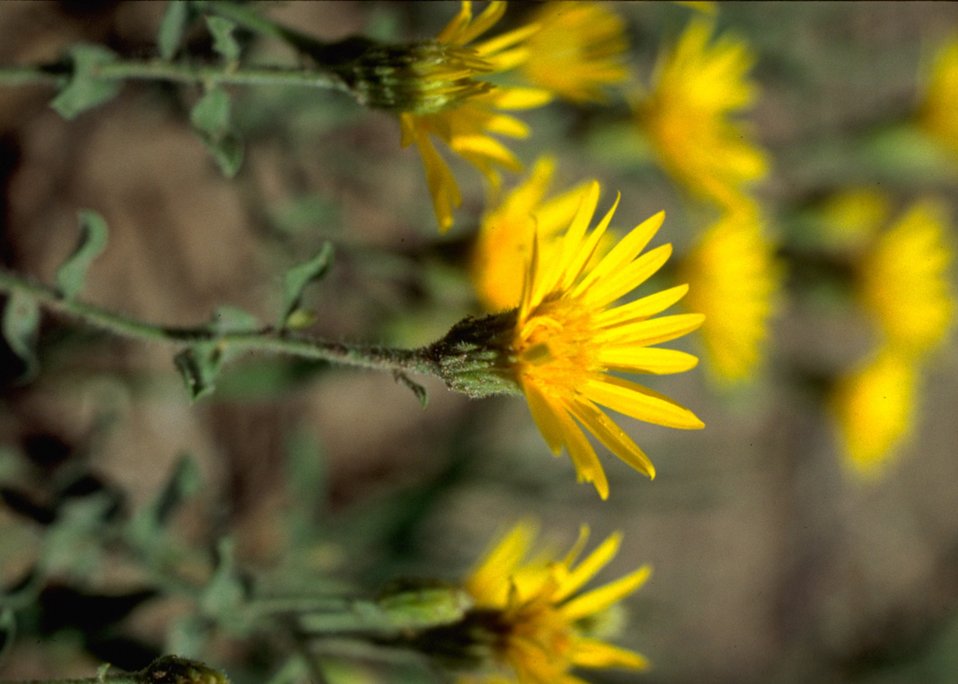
These mostly herbaceous perennials are aster-like members of the Fam. Astereae that have yellow rays (or sometimes purplish in Noticastrum), yellow disc florets.